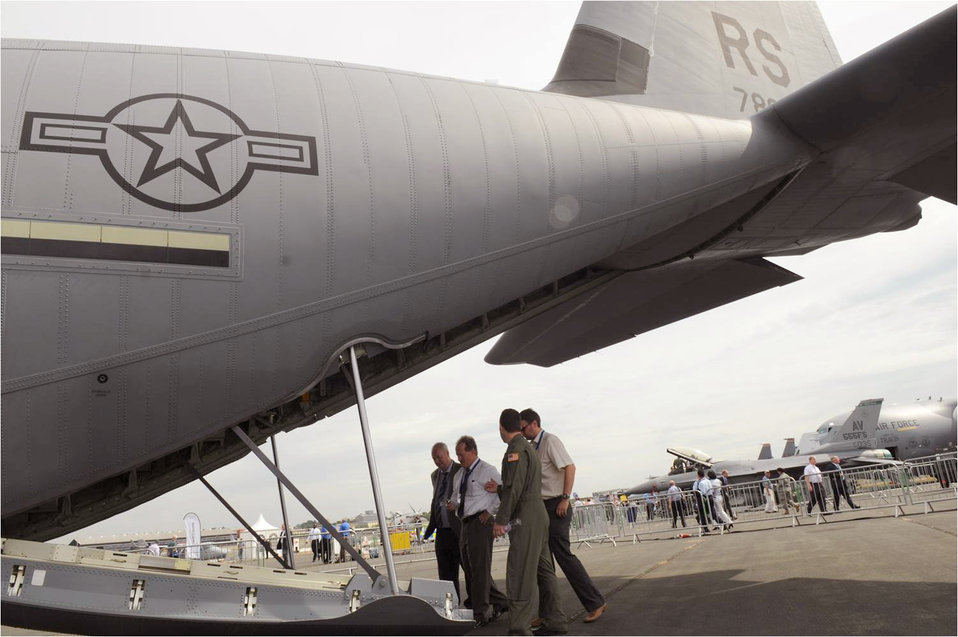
C-130J at Farnborough 2010

Capt. Samuel Bartrone escorts a group of spectators into the cargo bay of a C-130J Super Hercules at the 2010 Farnborough International Air Show July 20, 2010, in Farnborough, England. The air show takes place July 19 through 25, with approximately 1,300 exhibitors from private, commercial civil and military sectors. Captain Bartrone is a 37th Airlift Squadron pilot from Ramstein Air Base, Germany.